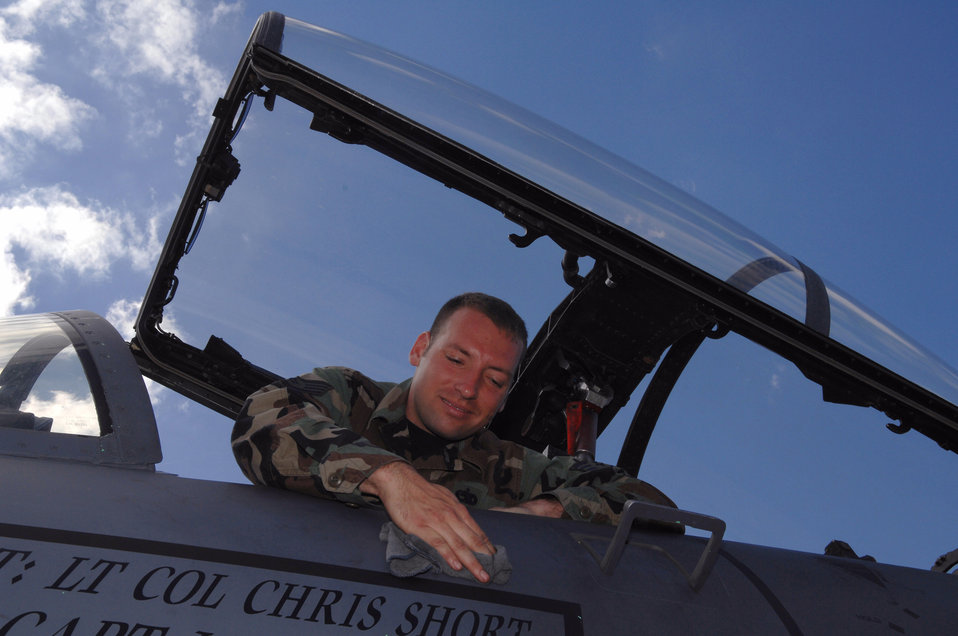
Berlin Airshow kicks-off on a 'high note'

Staff Sgt. Eric Lackey, an aircraft maintenance crew chief, cleans the exterior of an F-15 Eagle from the 48th Fighter Wing, Royal Air Force Lakenheath, U.K. here May 25 in preparation for the 2008 Berlin Airshow. U.S. participation in the Berlin Air Show enhances the U.S.-German military-to-military relationship and supports our security cooperation strategic direction efforts.